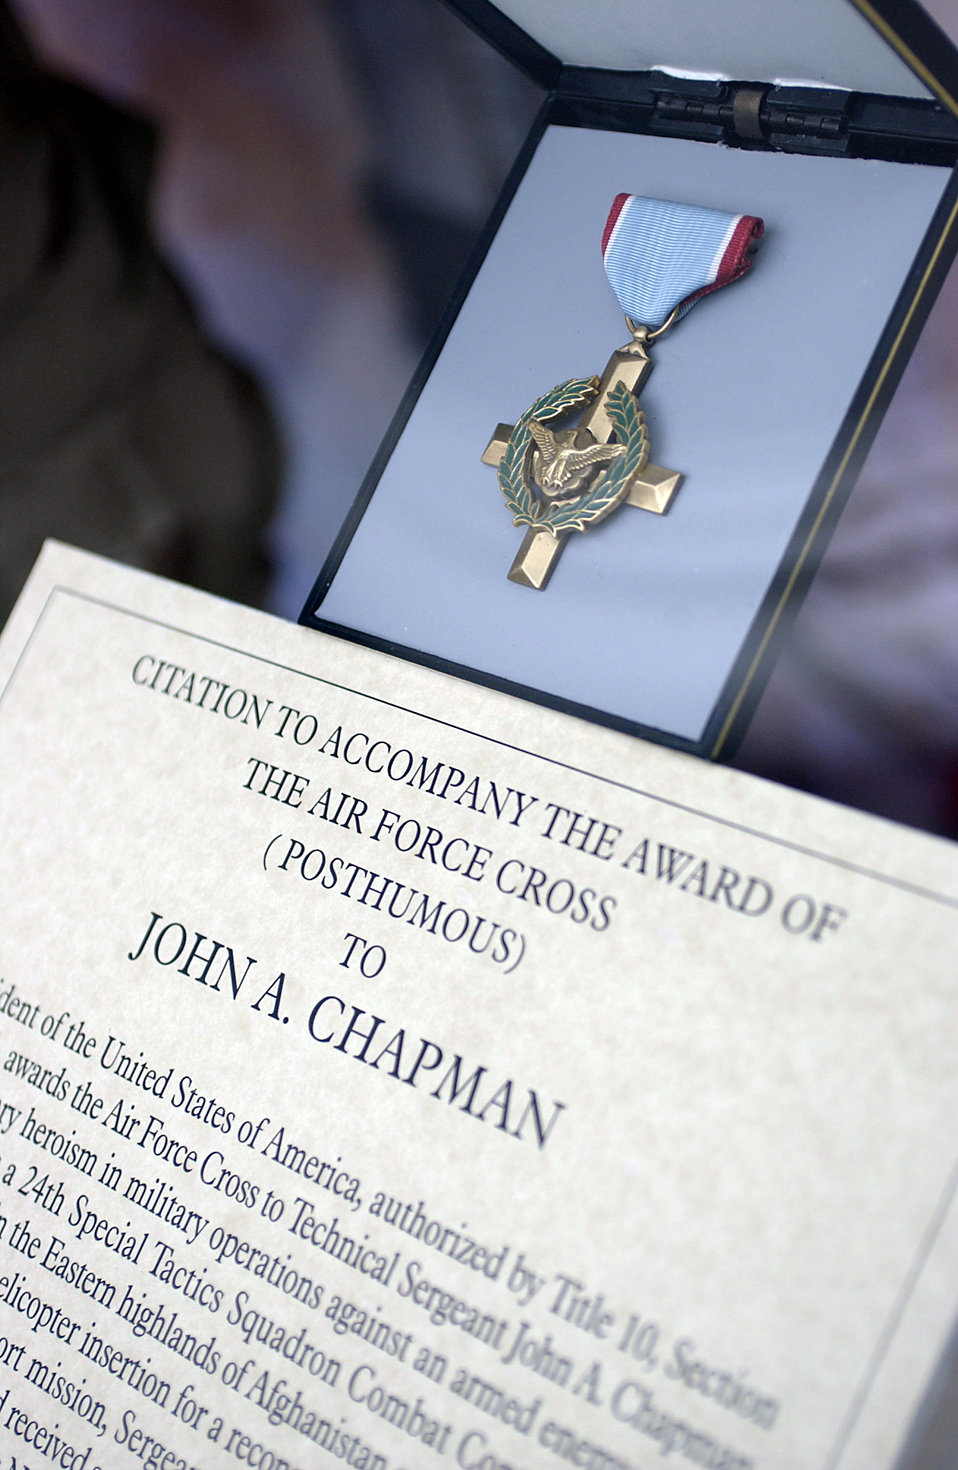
Unveiling ceremony

WASHINGTON -- Air Force Secretary Dr. James G. Roche unveiled a memorial at Arlington National Cemetery on Jan.8 to honor Tech. Sgt. John A. Chapman who was killed March 4, 2002, while fighting against the Taliban during Operation Anaconda in Afghanistan. He was posthumously decorated with the nation's second-highest award for valor, the Air Force Cross.